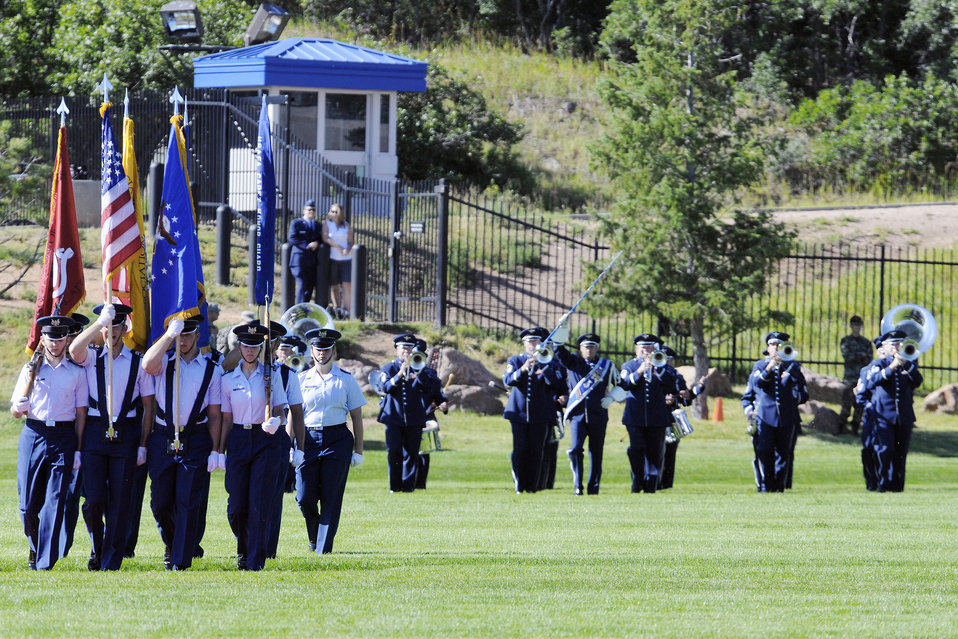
Academy acceptance parade

The colors are brought forward during the Acceptance Parade Aug. 5 at the U.S. Air Force Academy in Colorado. The parade marks the official end of Basic Cadet Training and formally welcomes the new class into the cadet wing.